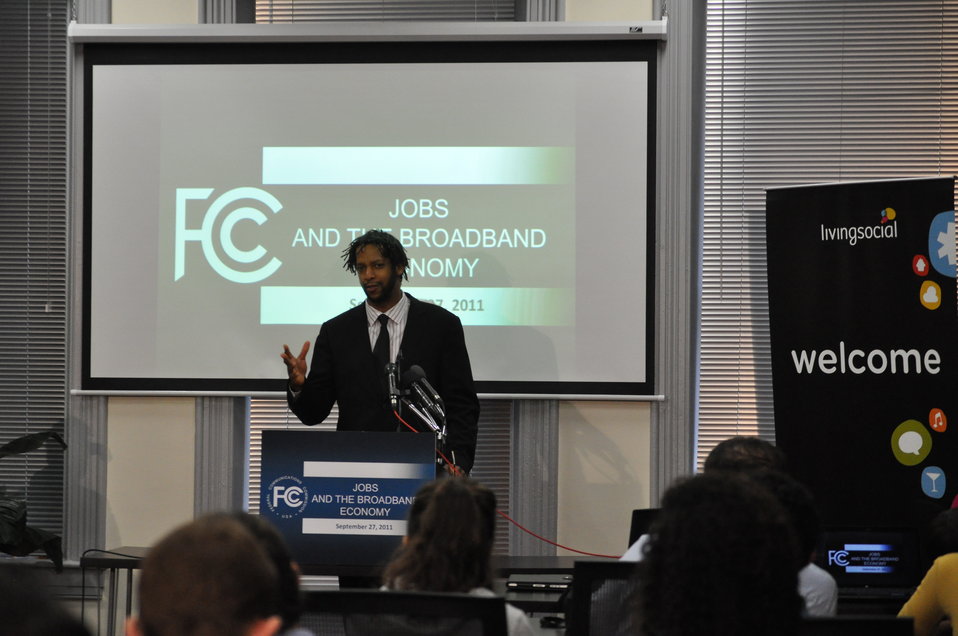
Jobs and the Broadband Economy

Warren Brown, Founder and Owner of CakeLove